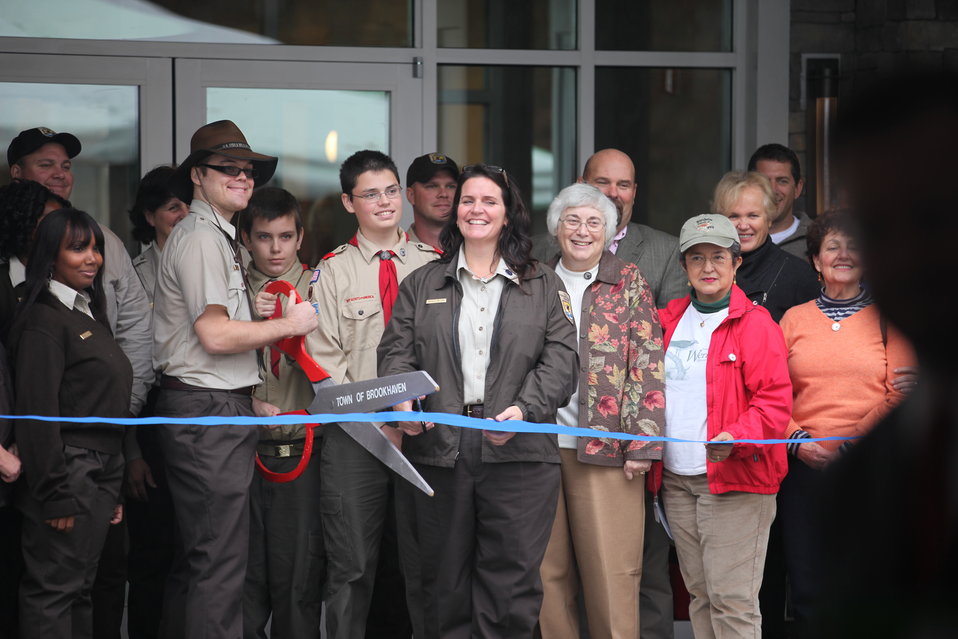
Ribbon Cutting

Refuge Manager Michelle Williams, her staff and the Friends of Wertheim NWR cut the ribbon!